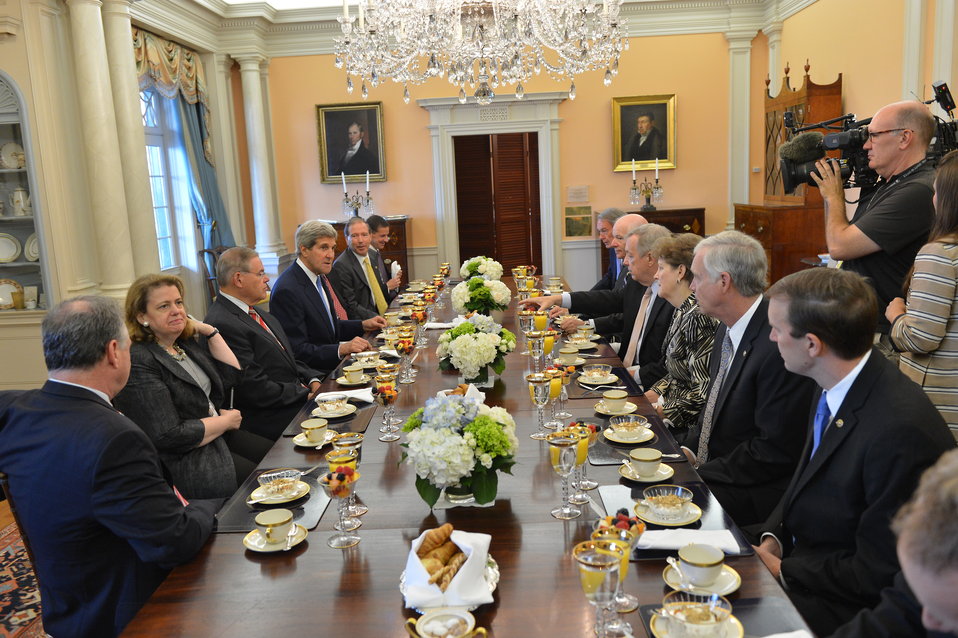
Secretary Kerry Meets With Members of the Senate Foreign Relations Committee

U.S. Secretary of State John Kerry meets with members of the Senate Foreign Relations Committee, at the U.S. Department of State in Washington, D.C. on June 18, 2014.